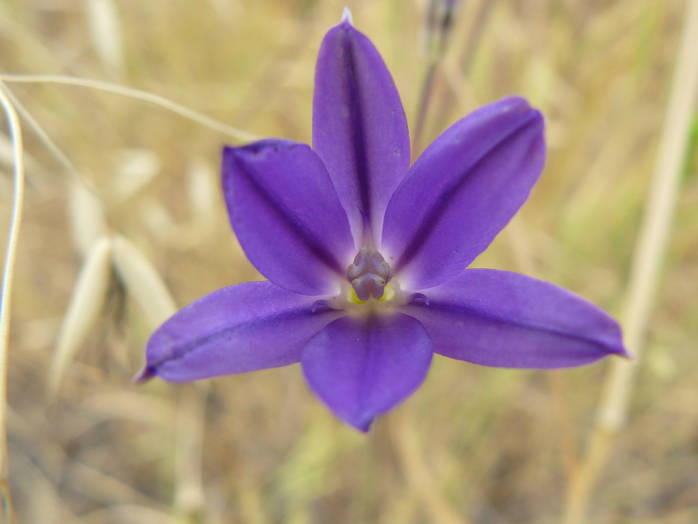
thread-leaved brodiaea

Southern California